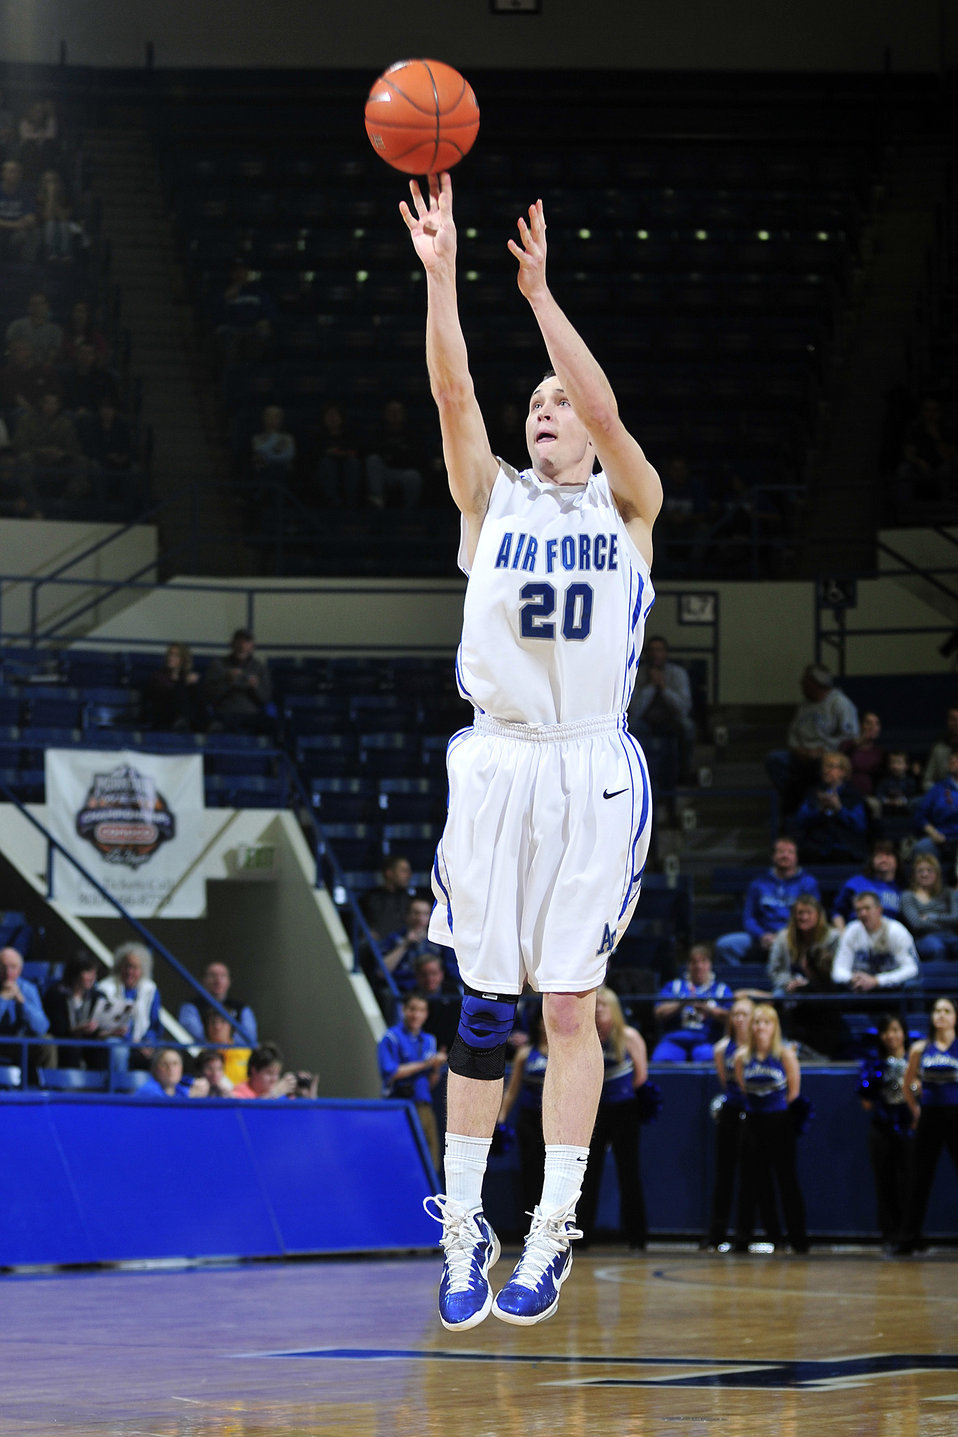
Falcons win home opener

Air Force Academy senior Tom Fow goes up for 3 of his 17 points during the Falcons Mountain West Conference home opener Jan. 5, 2011, against Utah. Fow shot 50 percent from behind the arc as the Falcons upset the Utes 77-69 at the Academy's Clune Arena in Colorado Springs, Colo.